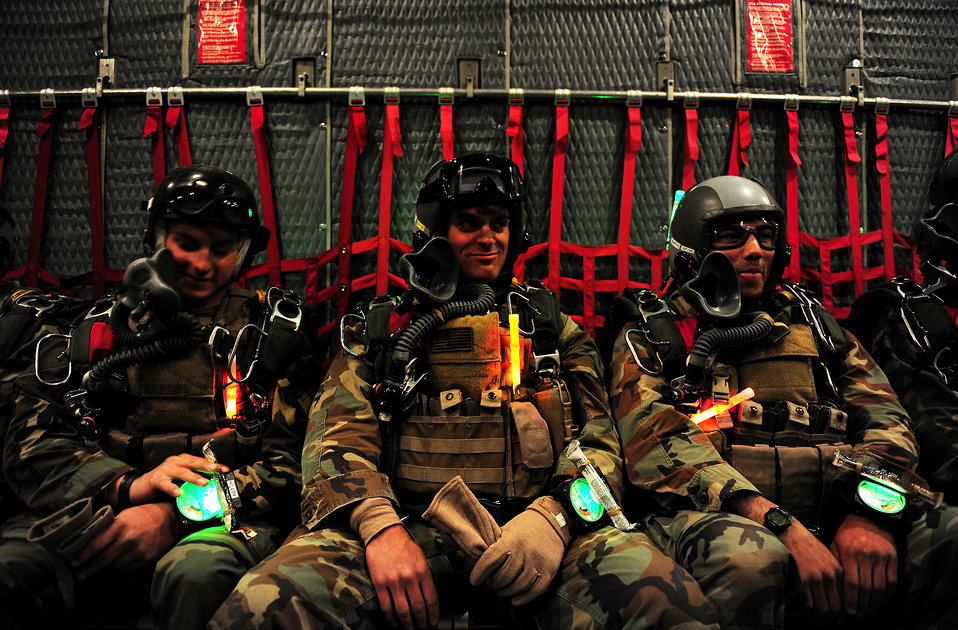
Special Tactics Airmen jump at night

Airmen of the U.S. Air Force Special Tactics Training Squadron wait to jump on a high altitude, low opening or HALO, mission near Fort Walton Beach, Fla., March 16, 2010, during Exercise Emerald Warrior 2010. U.S. military servicemembers participated in the 19-day joint training exercise, which provided participants realistic training scenarios at multiple sites along Florida's Gulf Coast. U.S. Special Operations Command sponsor the multi-service event.